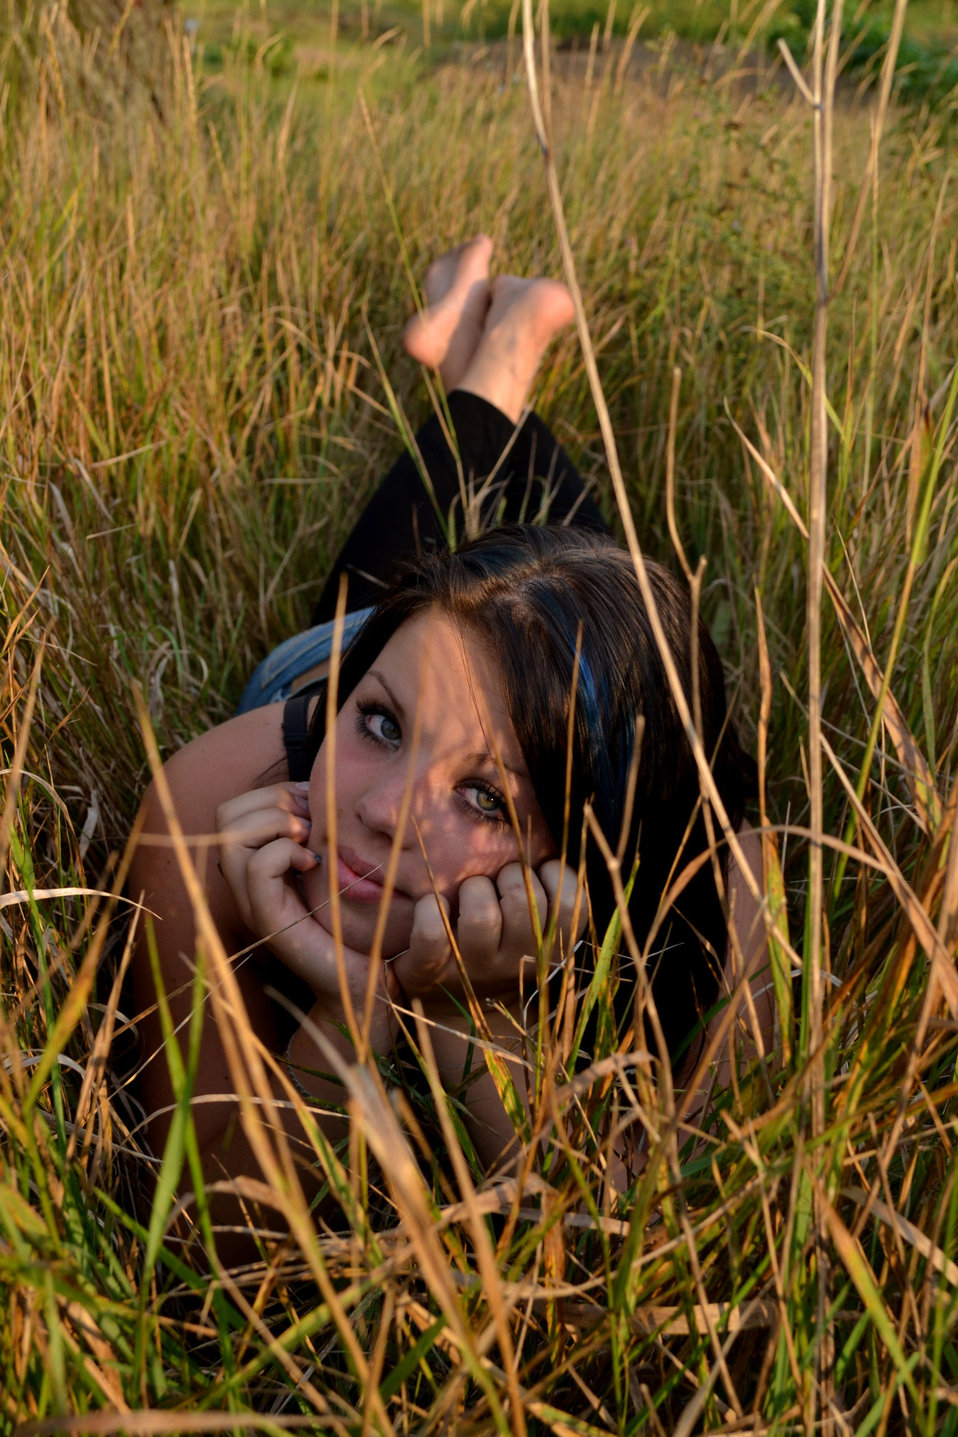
Spring

Girl lying in grass.